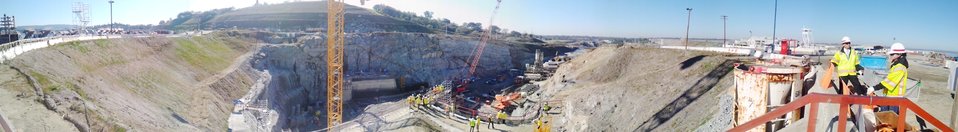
Panoramic view of Folsom Dam auxiliary spillway construction

A panoramic view of the Folsom Dam auxiliary spillway construction site in Folsom, Calif., shown Jan. 16, 2013. The spillway project is scheduled for completion in 2017.